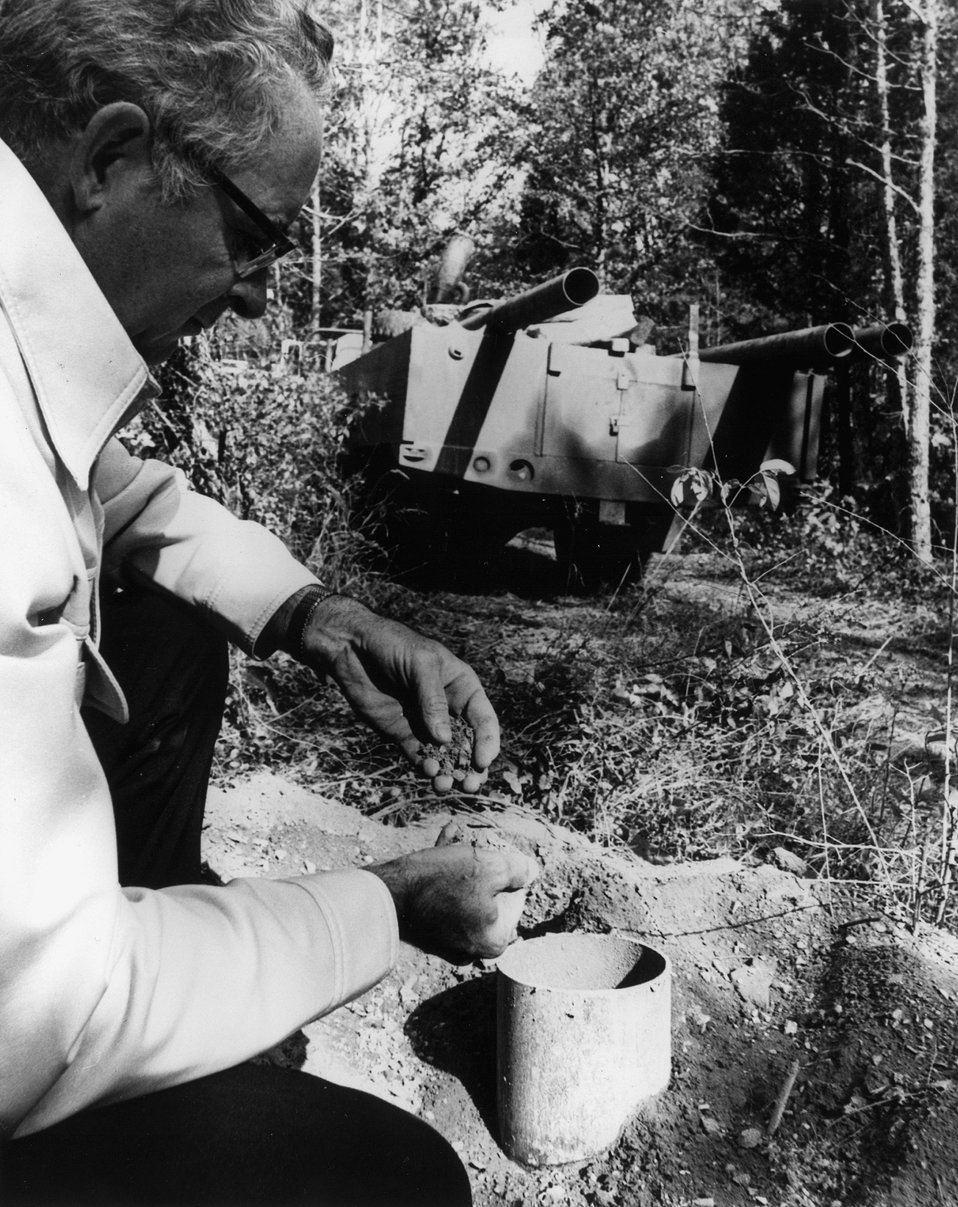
Exploratory core drilling operations to find a suitable location for studying the effect of heat on shale rock are being conducted on the Energy Research and Development Administration's reservation in Oak Ridge, Tennessee as part of a geological study related to ERDA's national program for safe terminal storage of commercial high level nuclear waste. c. 1977